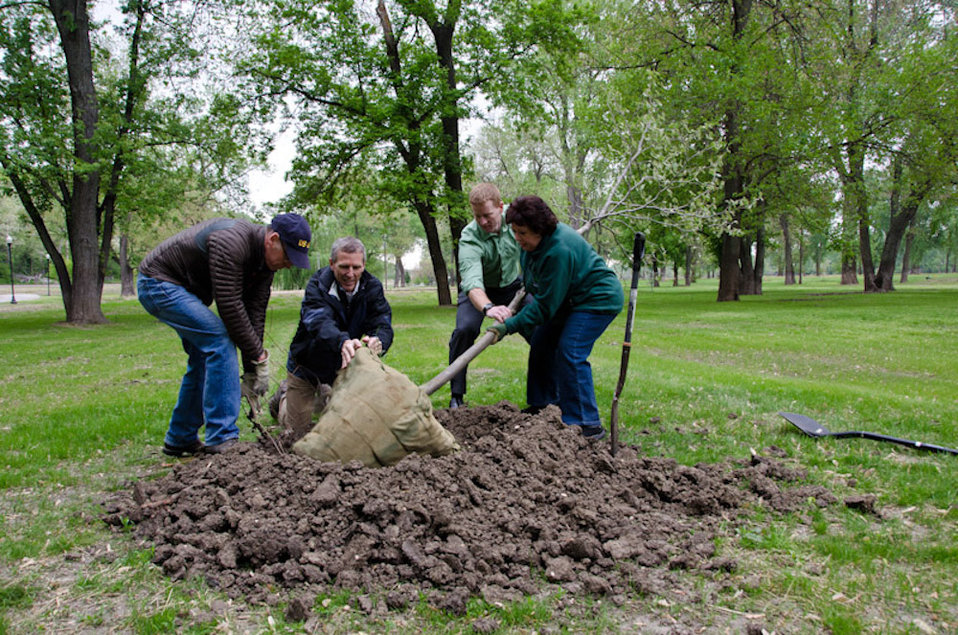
April 12, 2012 EPA helps City of Parkville, MO replace trees lost in last years flooding along the Missouri River

EPA Region 7 helped the City of Parkville, MO plant trees in English Landing Park, on April 12, 2012. The 68-acre park lost approximately 100 trees after last year's flooding along the Missouri River.

The trees and native sedges, rushes, grasses and broadleaf plant species will help anchor the soil and keep sediment out of the Missouri River.
This project marked an early celebration of Earth Day (April 22) and Arbor Day (April 27).

EPA Region 7 more locally serves Iowa, Kansas, Missouri, Nebraska and nine tribal nations.

www.epa.gov/region7
www.facebook.com/eparegion7

Left to right EPA Region 7 employees: Kris Lancaster, Karl Brooks, Parke Stevens and Gayle Hubert.